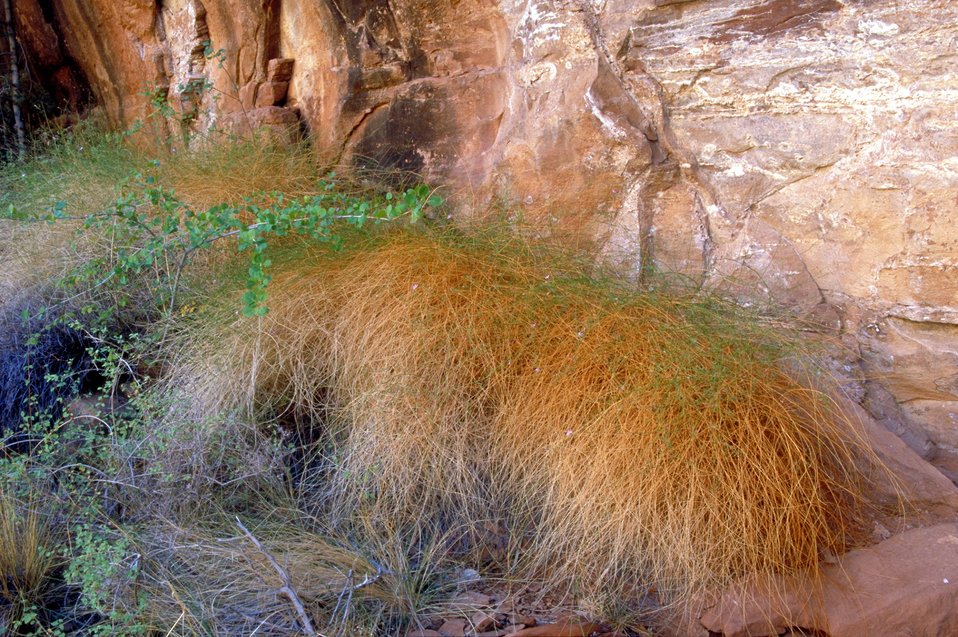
Vegetation in Hunter Canyon near Moab, Utah.